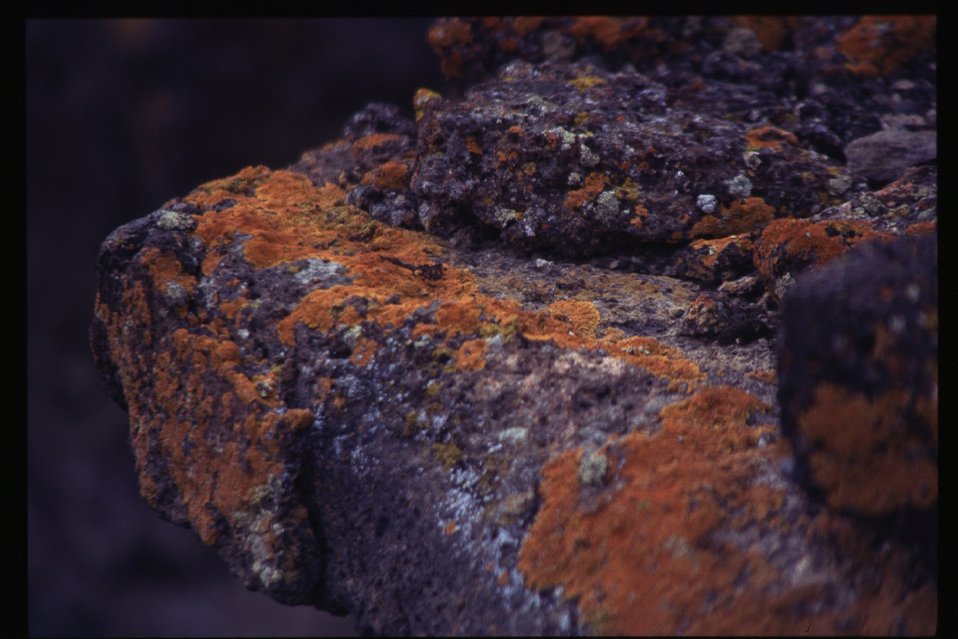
Orange lichen Snake River Canyon Owyhee Field Office LSRD Lower Snake River District